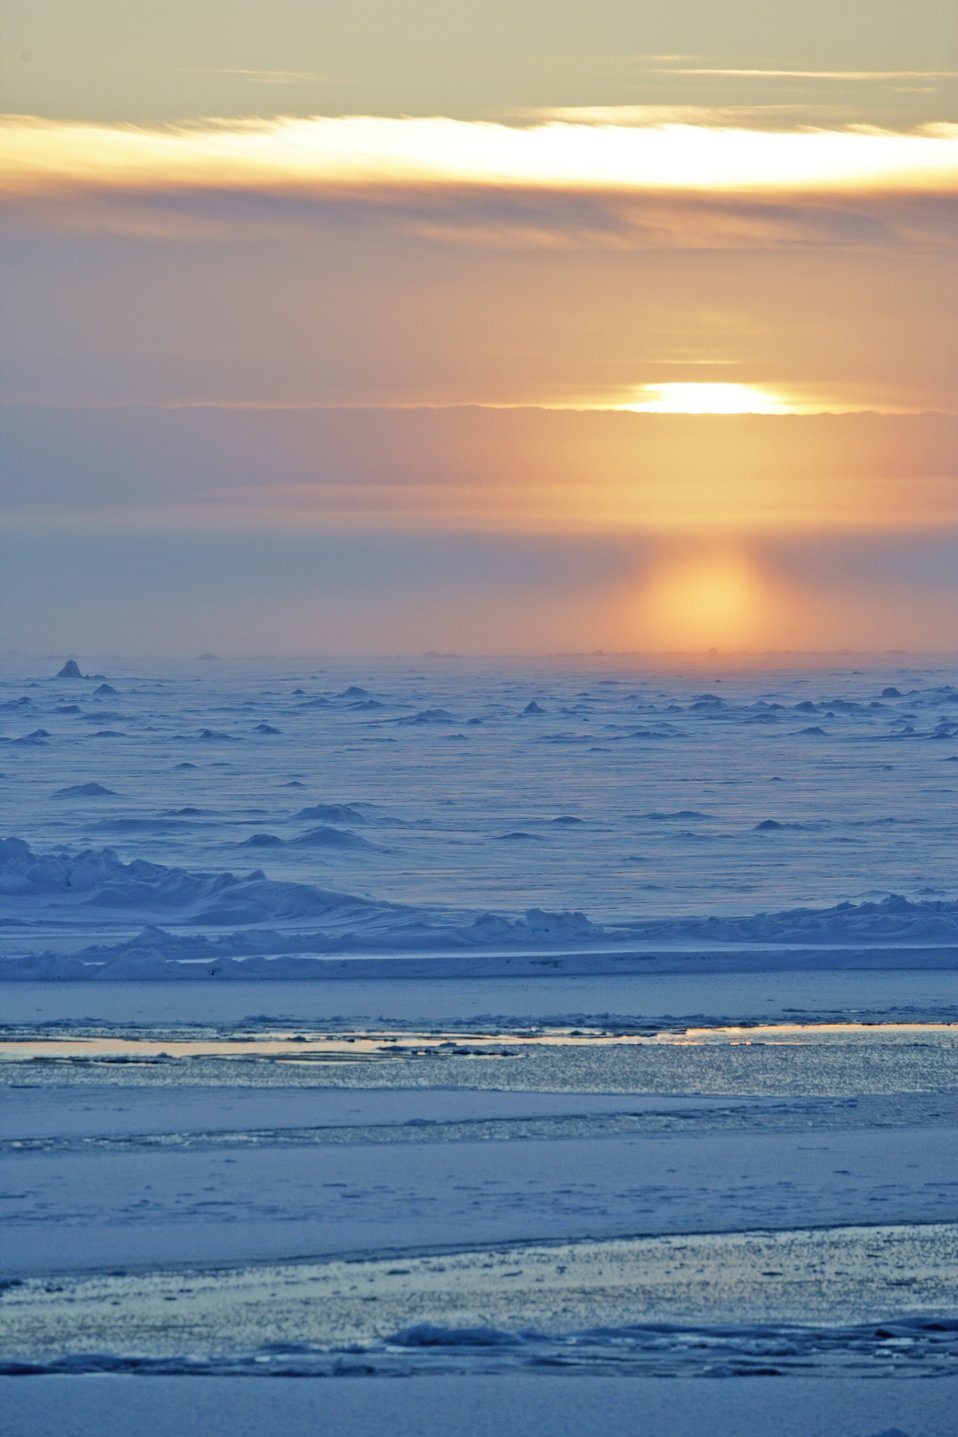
Arctic sunset.